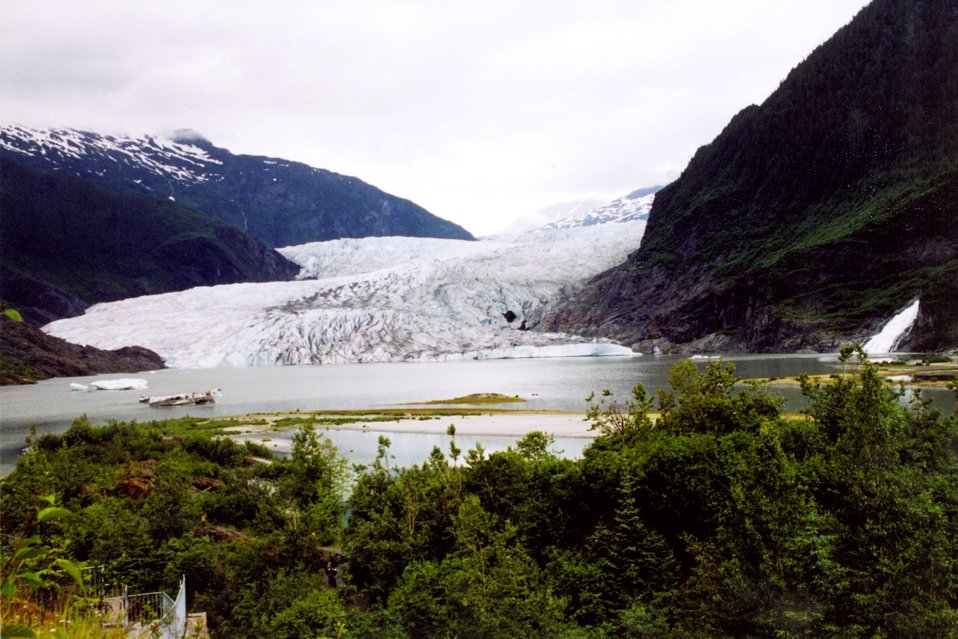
Mendenhall Glacier